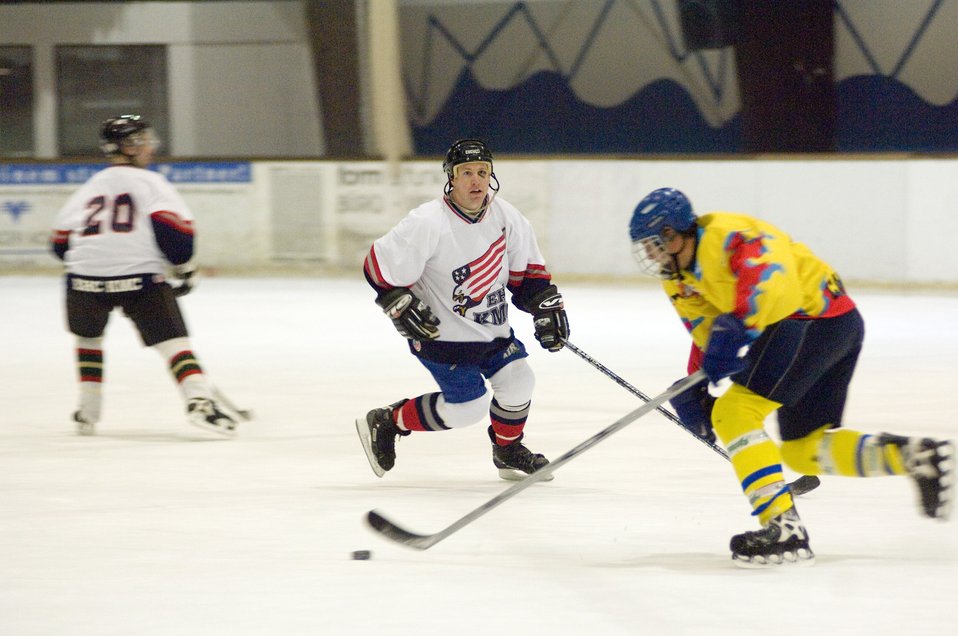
Eagles glide toward tourney

EPPELHEIM, Germany (AFPN) -- Capt. Paul Hilfer glides in the way of an Eppelheim Hawk. The KMC Eagles won 6-4 against the Eppelheim Hawks, maintaining second place in their league. The Kaiserslautern Military Community hockey team is made up of 30 players in different skill levels varying from semi-pro and college to players experiencing their first organized game. Captain Hilfer is with the 435th D Squadron at Ramstein Air Base, Germany.